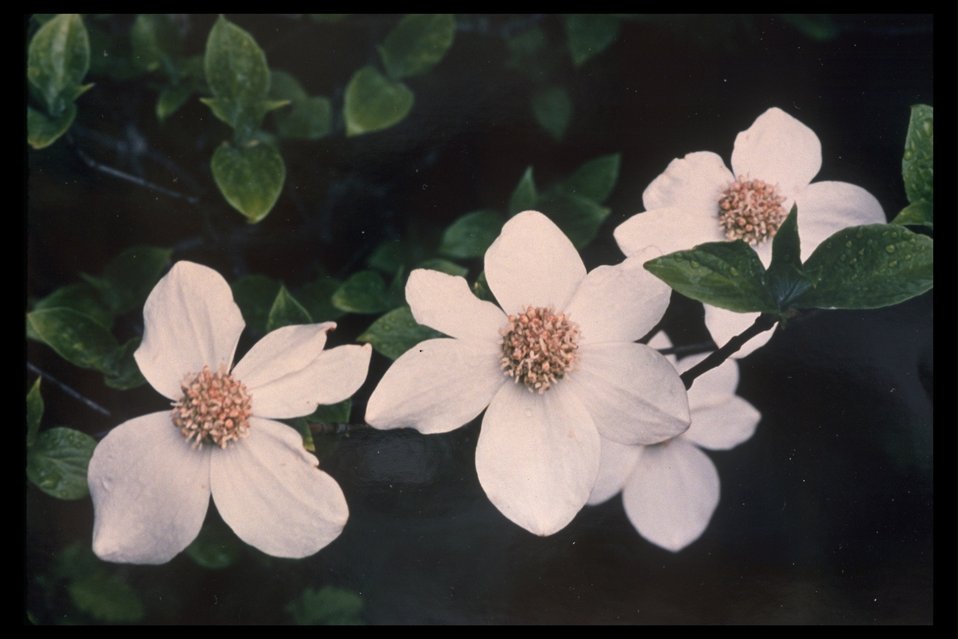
Pacific Dogwood (Cornus nuttallii) along Salt Creek. East of Medford, off Highway 140.